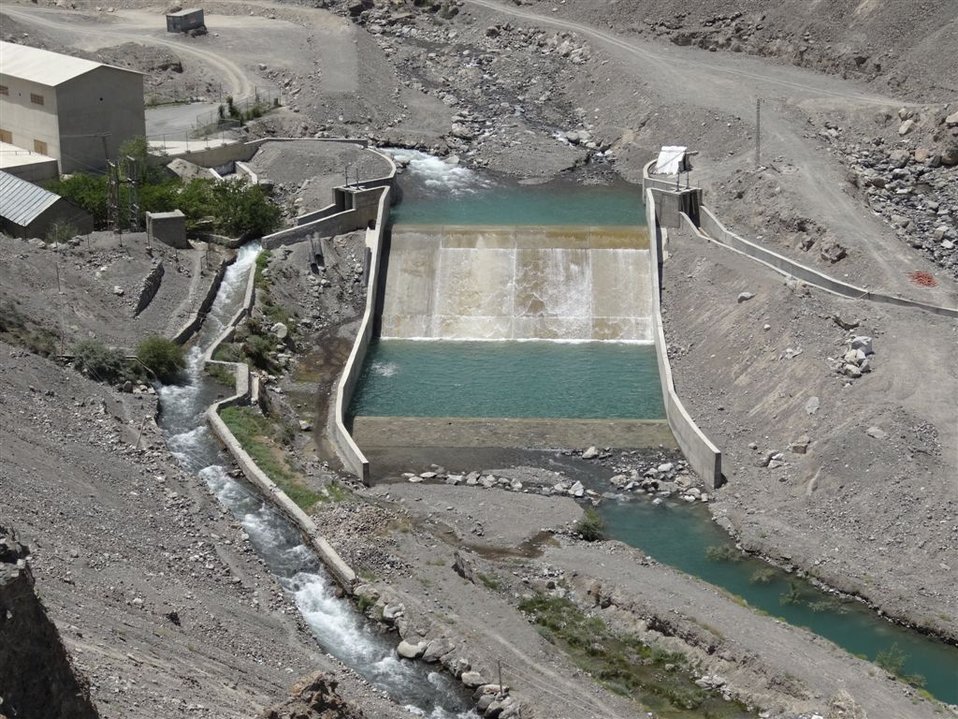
Irrigation Weir-Satpara